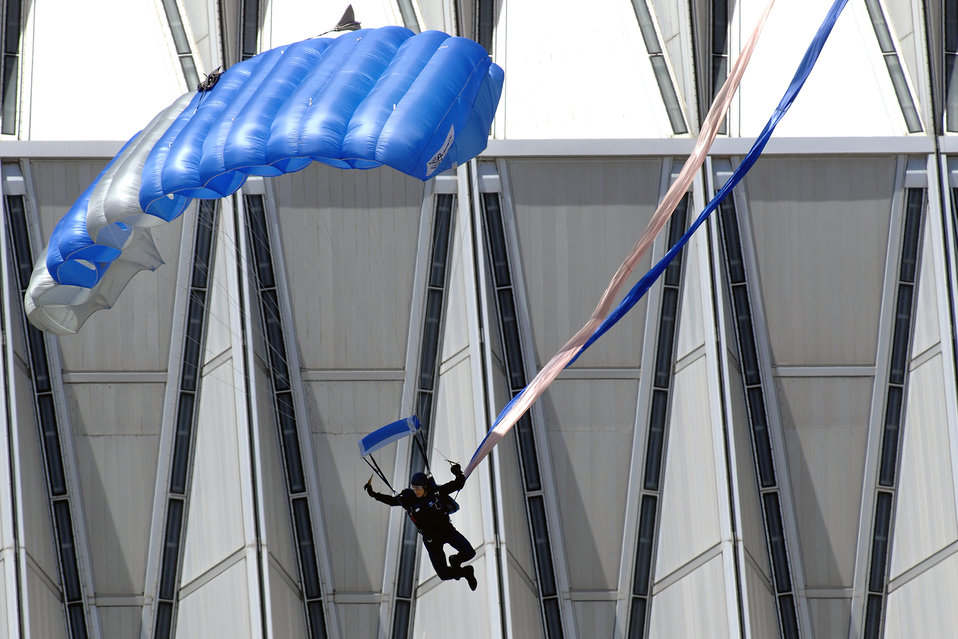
Wings of Blue

A member of the U.S. Air Force Academy's Wings of Blue Parachute team carefully maneuvers his canopy near the Cadet Chapel toward a successful landing in the Academy's cadet area in Colorado May 6. The team performed a demonstration jump during the afternoon meal formation in front of the entire cadet wing and Academy visitors.